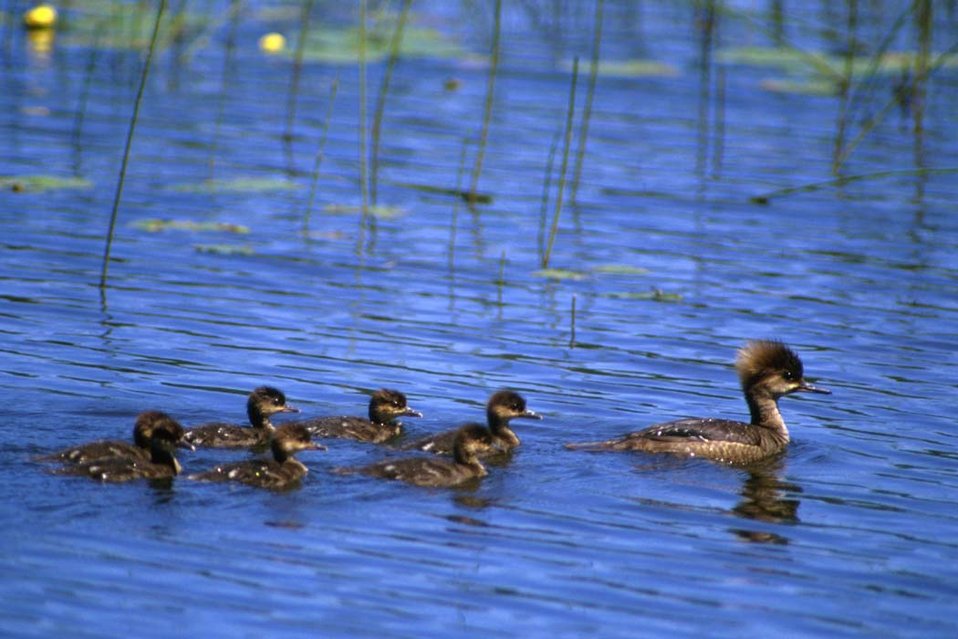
Hooded Merganser Brood